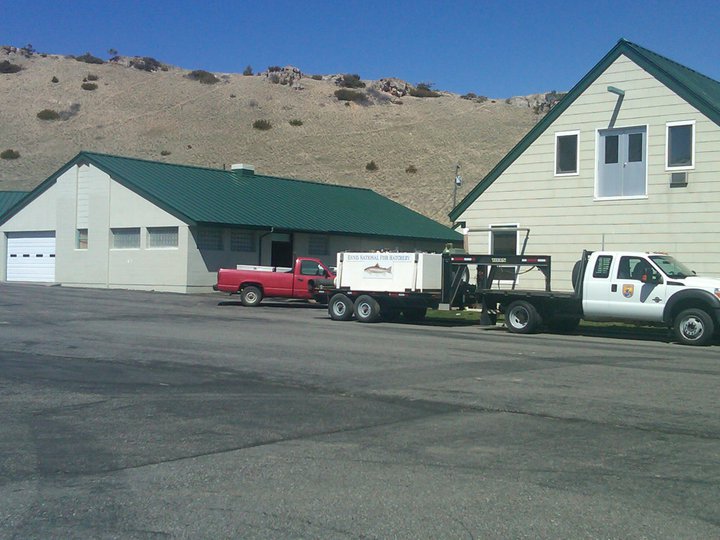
Buildings at Ennis National Fish Hatchery

Visitor center (Right) and fish production facility (Left) at Ennis National Fish Hatchery. Connie Keeler-Foster, project leader, and Sean Henderson showed us around this historic hatchery that produces millions of rainbow trout eggs annually for research facilities, universities, and other hatcheries in 23 different states.